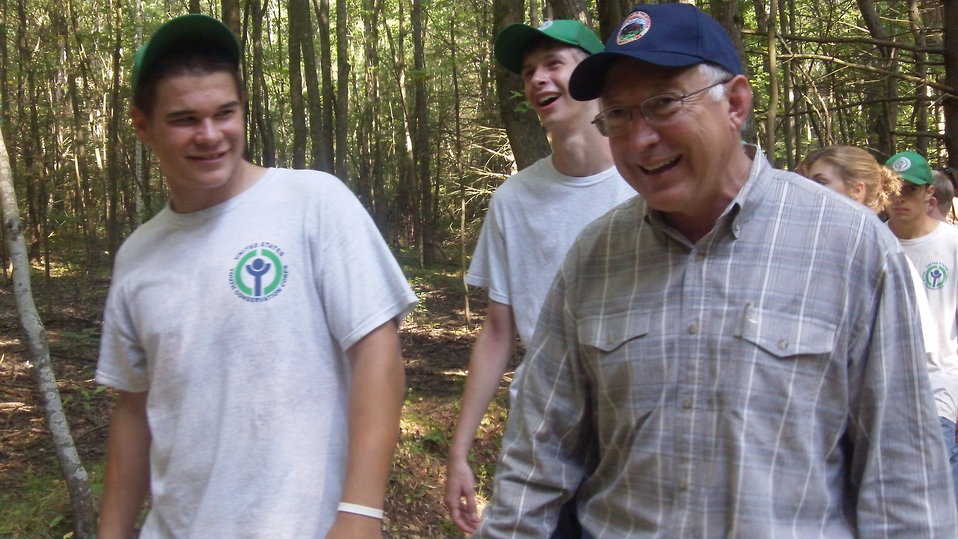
Secretary Salazar visit to Great Bay

Secretary of the Interior Ken Salazar talks with members of the Youth Conservation Corps as they walk the new Upper Peverly Pond Trail boardwalk at Great Bay National Wildlife Refuge. The YCC kids built the boardwalk over the last three summers. Visit occurred on August 19, 2011.